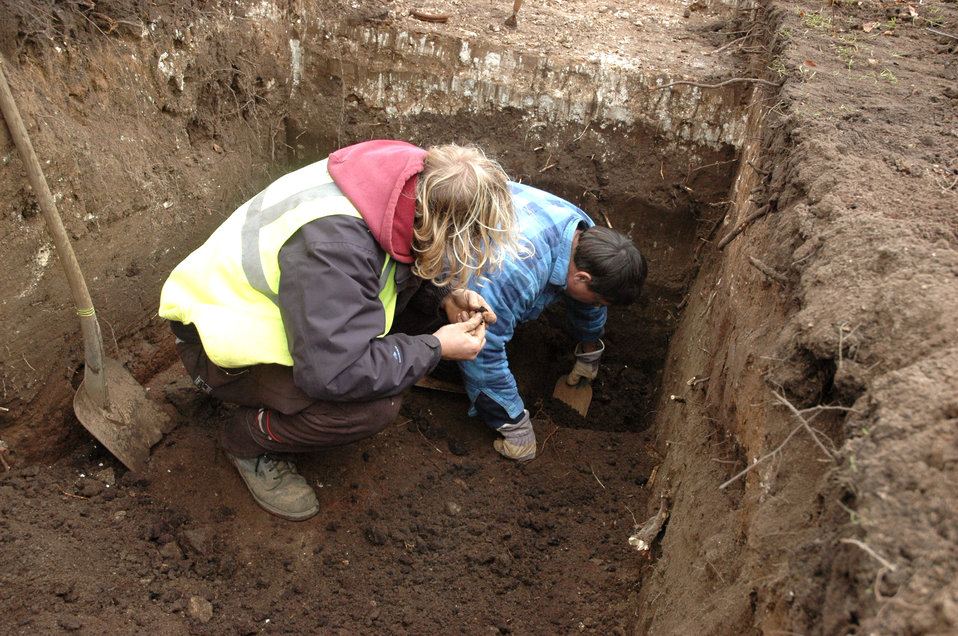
New RAF housing site could be history's hiding ground

British archeologist Nick Taylor (left) inspects fragments of rock from a dig site as fellow archeologist Jonathan Van Jennians continues to dig. The trial trenches are being dug at RAF Mildenhall, England where new officer housing units are to be built. The United Kingdom requires all construction projects go through this dig to ensure no potential historical artifacts are destoyed.